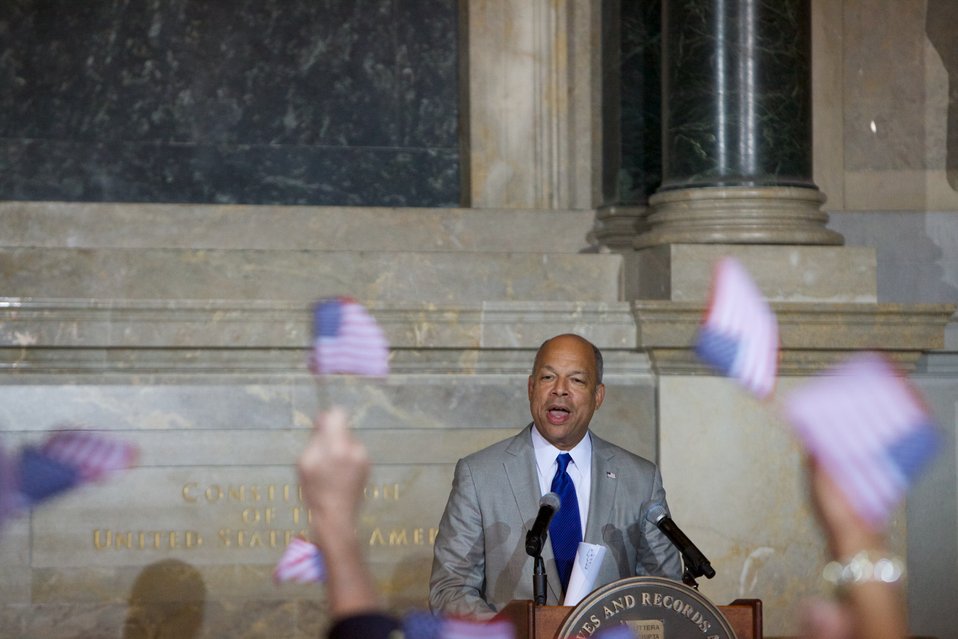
Naturalization Ceremony with Michelle Obama